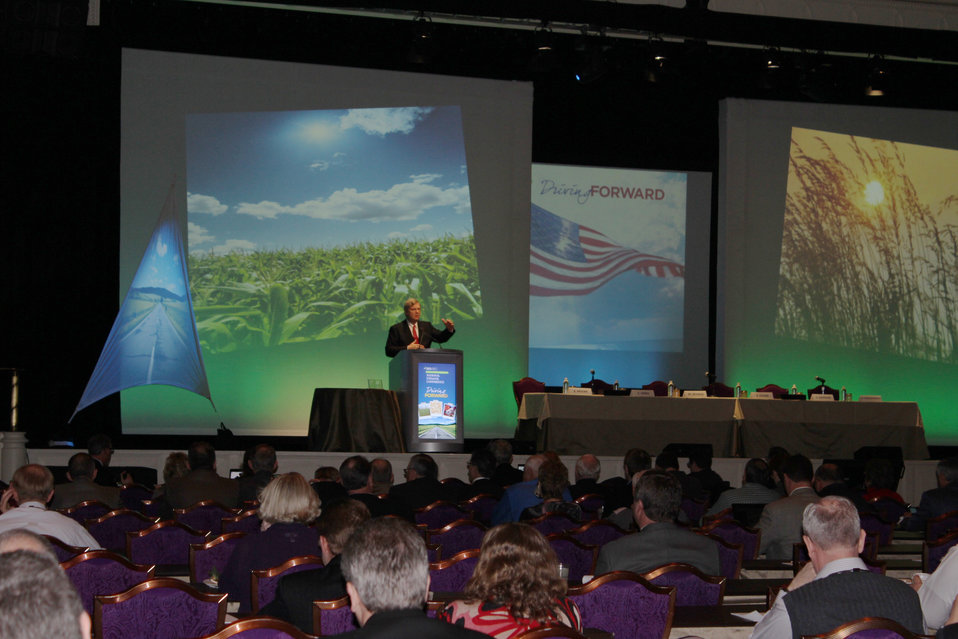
Agriculture Secretary Tom Vilsack speaks at the Renewable Fuels Association’s 18th Annual Ethanol Conference in Las Vegas, NV on Feb. 7, 2013. Secretary Vilsack discussed the unlimited opportunity for America to produce more homegrown energy through the development and innovation of advanced biofuels and the significant contributions biofuels and other biobased products have made to America’s economic and energy security, as well as the importance of supporting the industry through research, investment and increased collaboration.